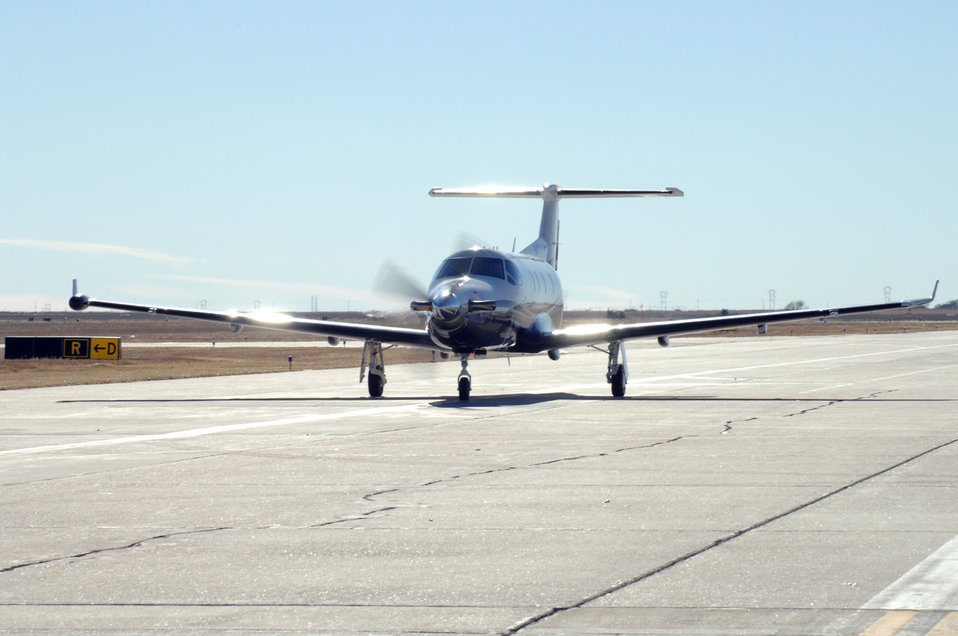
PC-12 crashes at Hurlburt Field

A PC-12 Pilatus, like the one pictured, crashed at about 11:30 p.m. July 8 on the runway at Hurlburt Field, Fla. The three people on board the aircraft were uninjured.